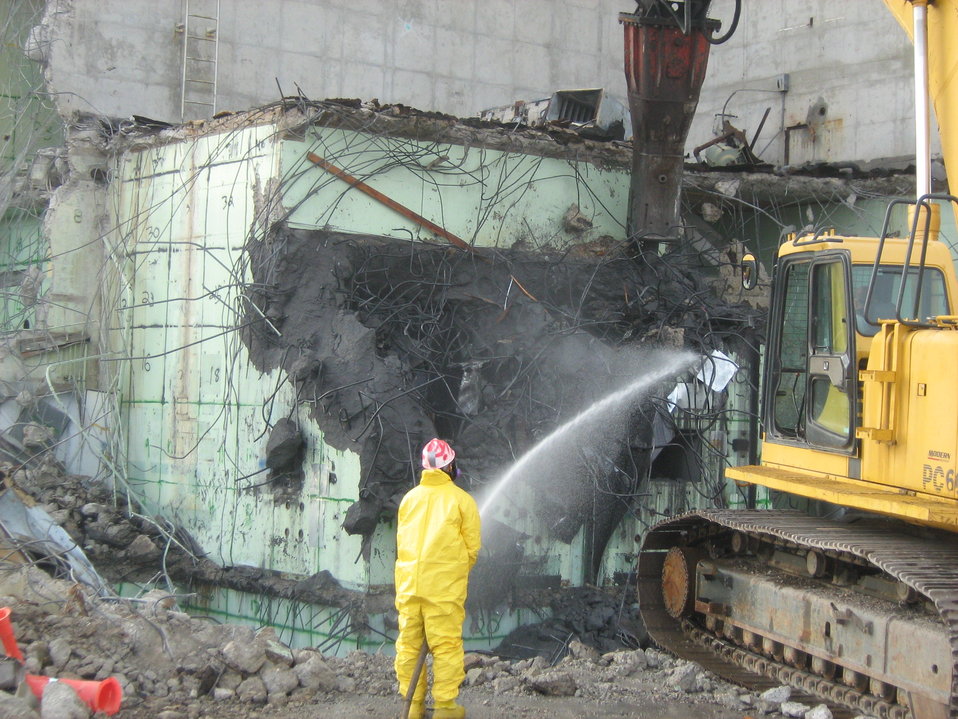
Safety Comes First for NNSS Demolition Projects

Crews perform demolition of the R-MAD facility. R-MAD is one of several Nevada National Security Site facilities which supported the nuclear rocket program that ended in 1973.